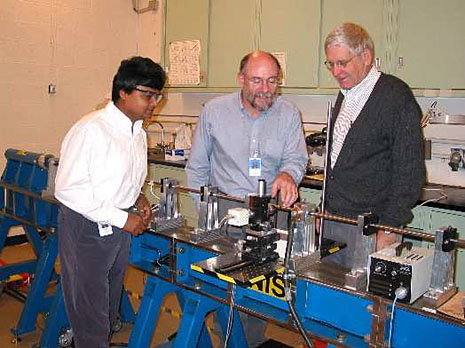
Timothy Burns (center) with Debasis Basak and Richard Rhorer(MEL) in the NIST Kolsky Bar Lab.